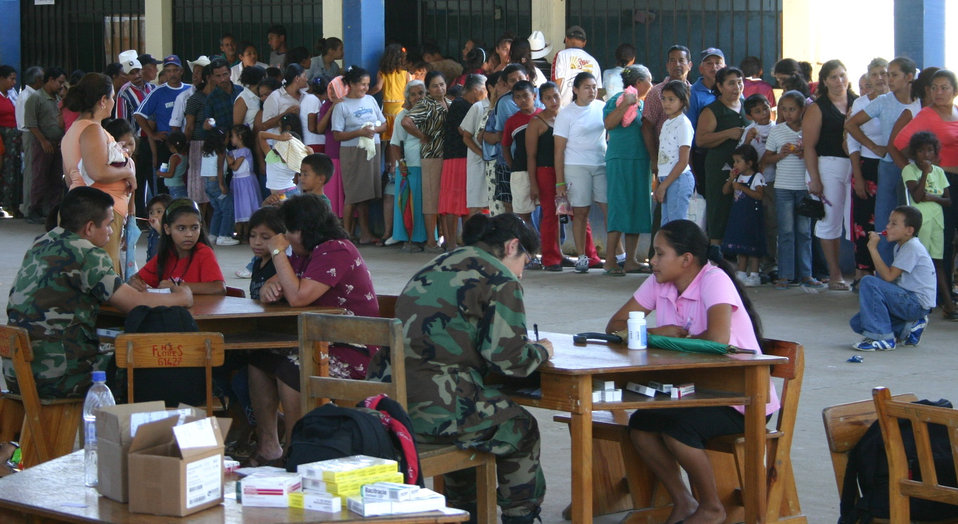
Patient patients

Patients line up to be seen at the medical readiness training exercise site in Santa Ana, Honduras. After being screened, patients are sent to the appropriate specialty care areas. The Air Force medical team saw more than 1,100 patients in the first two days of their four-day visit.